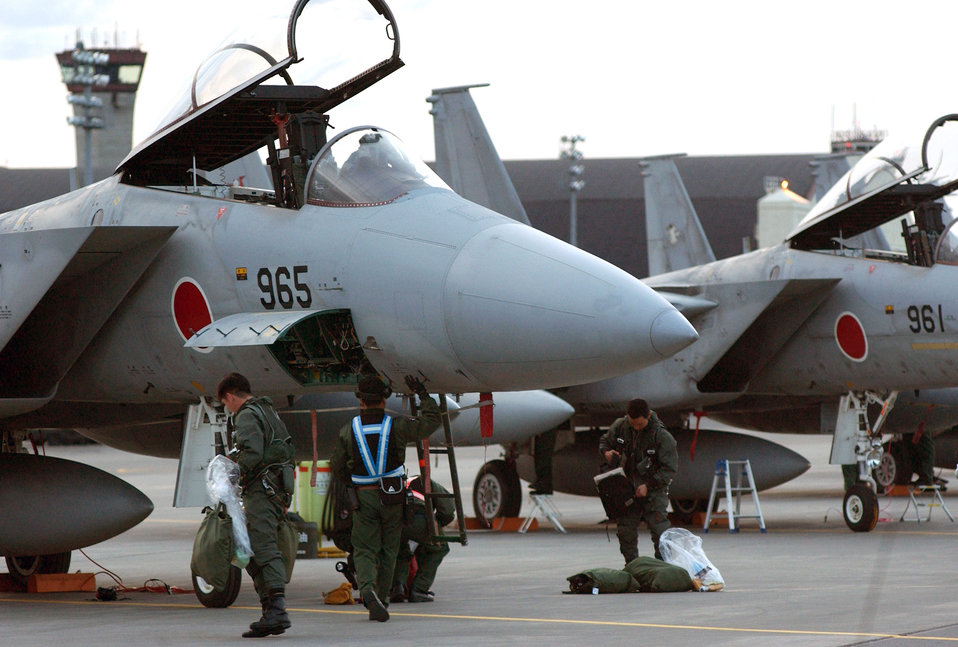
Oriental eagles

ELMENDORF AIR FORCE BASE, Alaska -- Japanese air self-defense force pilots and maintainers work on an F-15J fighter upon arriving here for Cooperative Cope Thunder. Cope Thunder is a Pacific Air Forces-sponsored, air combat training exercise taking place June 5 to 20.